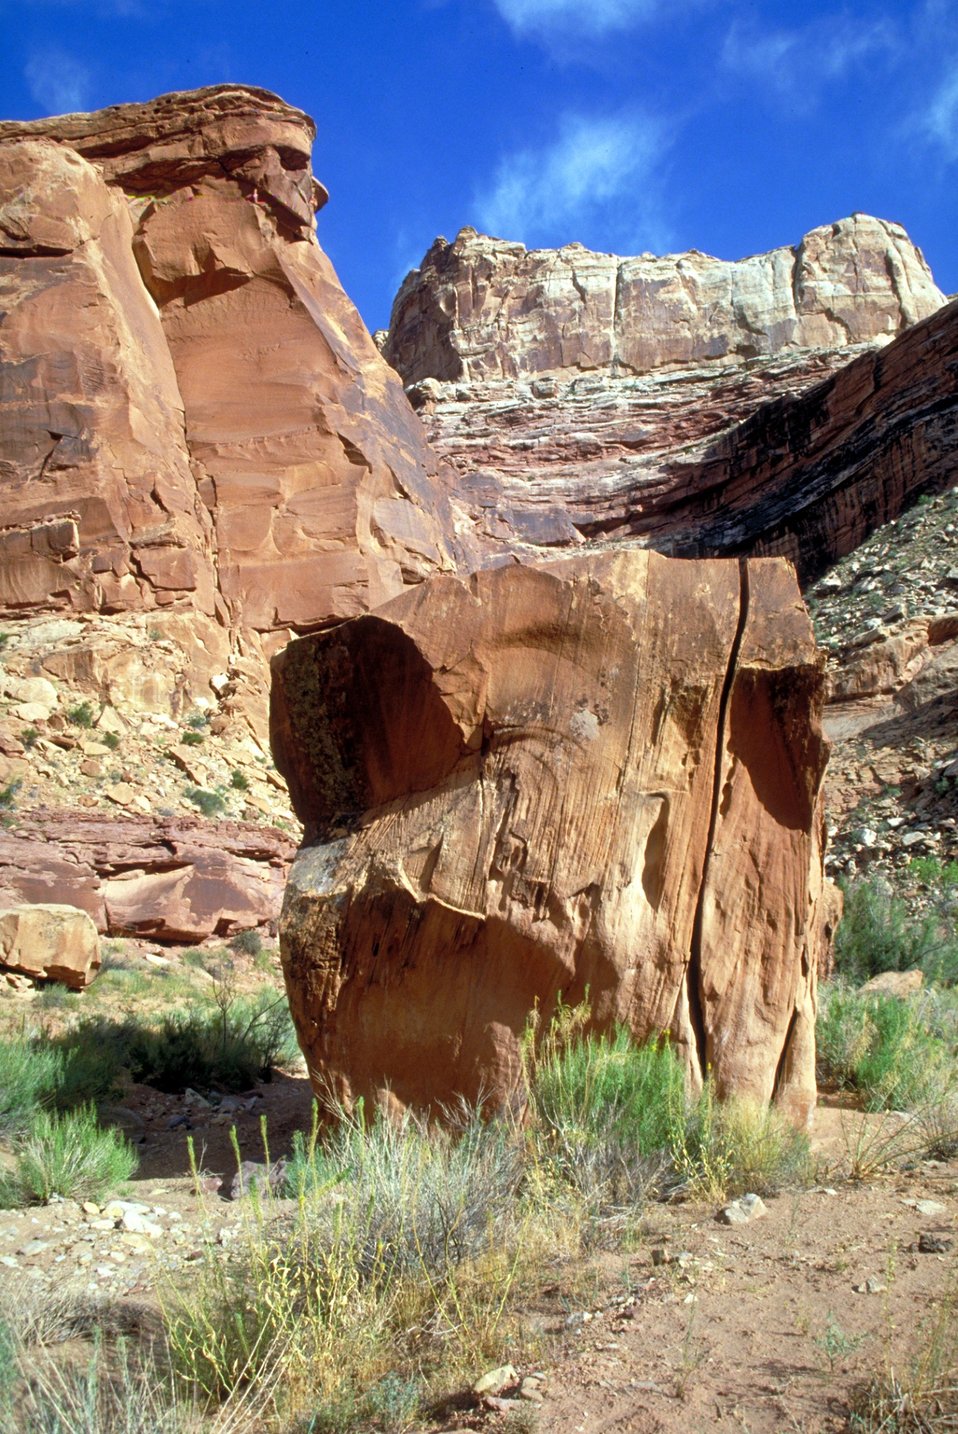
Black Dragon Wash near Green River, Utah.